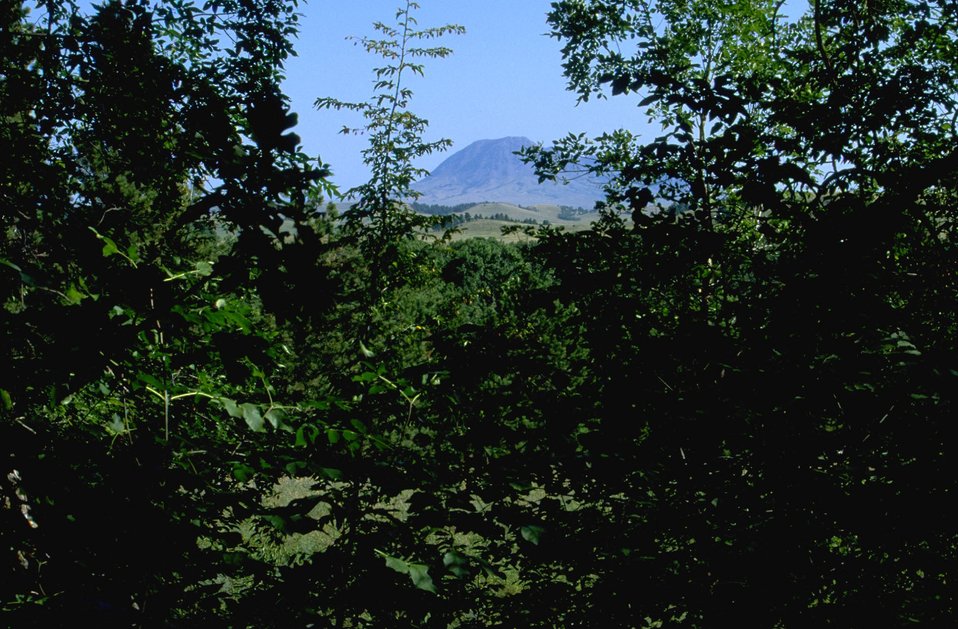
Bear Butte framed by trees